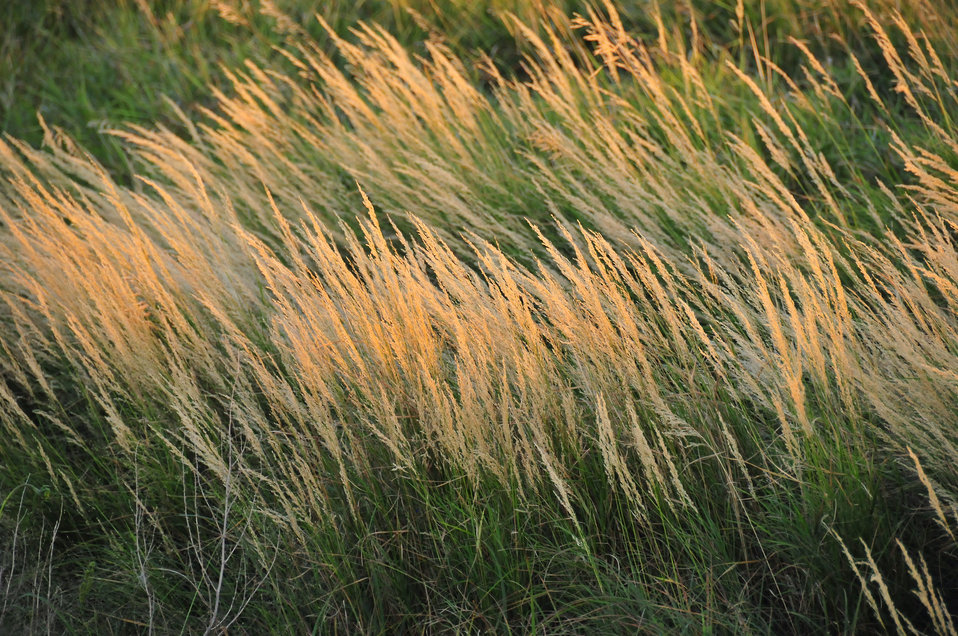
Canada bluejoint (Calamagrostis canadensis) Sand Lake Wetland Management District 02

Other common names include bluejoint, bluejoint reedgrass, Canadian reedgrass, meadow pinegrass, and marsh reedgrass. It is found in high quality wet meadows and wet prairies in tall and mixed grass prairies in the Prairie Pothole Region. Bluejoint is a long lived, perennial cool season grass with stout stems. It is used in wetland restoration and enhancement as well as shoreline and streambank stabilization.

Creeping underground shoots (rhizomes) improve the plant's ability to bind soil, especially along higher gradient streams and waterways. It is included in hydroseeding mixtures for drainage ditches designed to filter stormwater. This species provides forage for bison, deer, small mammals, waterfowl, and other bird species.

Bluejoint occurs from low to mid-elevation across most of Canada and the United States, except for the Southeast.